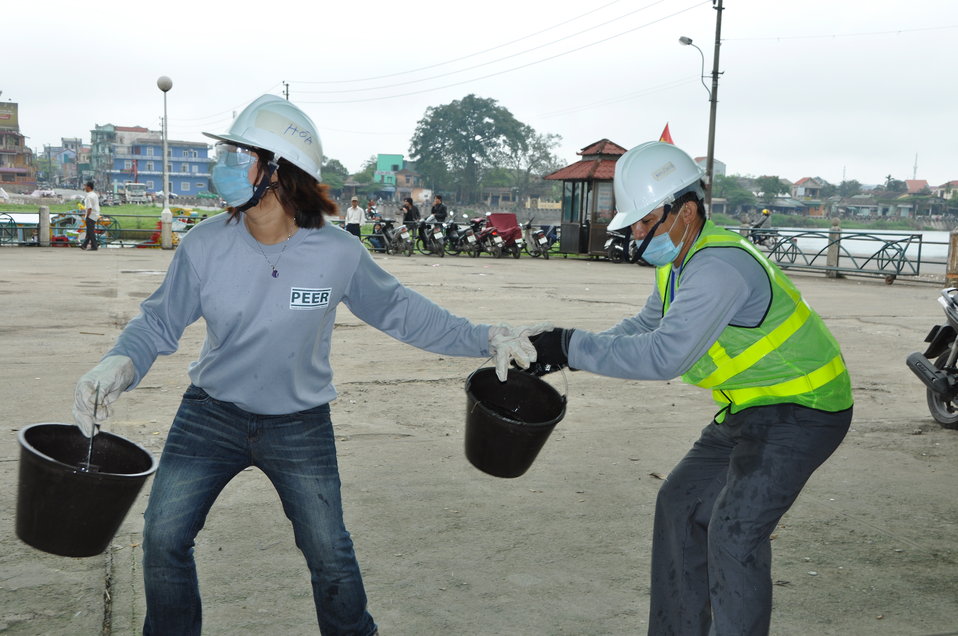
Disaster and Emergency Training Funded by USAID in Hue, Vietnam